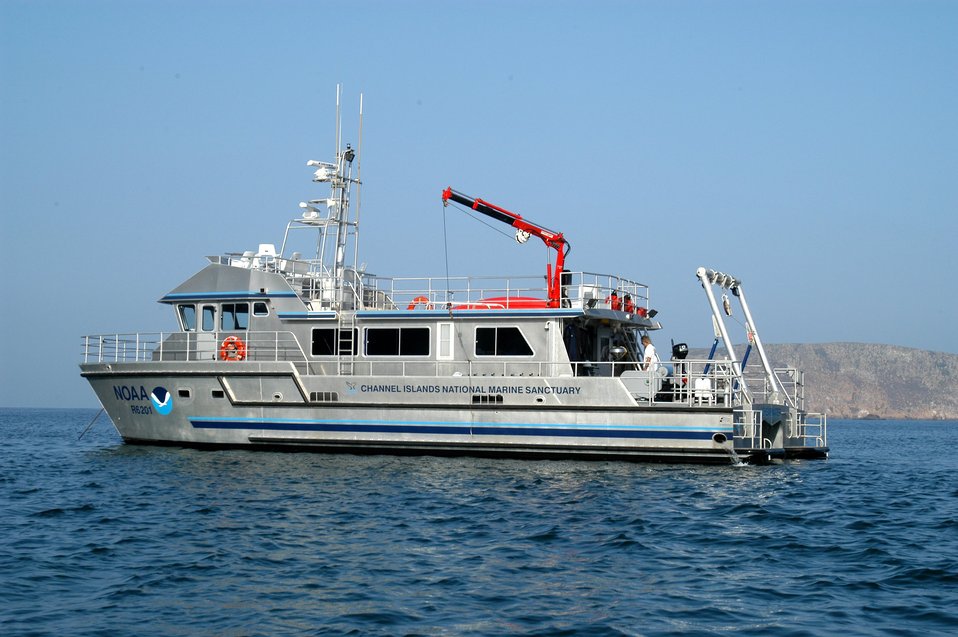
Channel Islands National Marine Sanctuary vessel SHEARWATER at Cuyler Harbor, San Miguel Island.